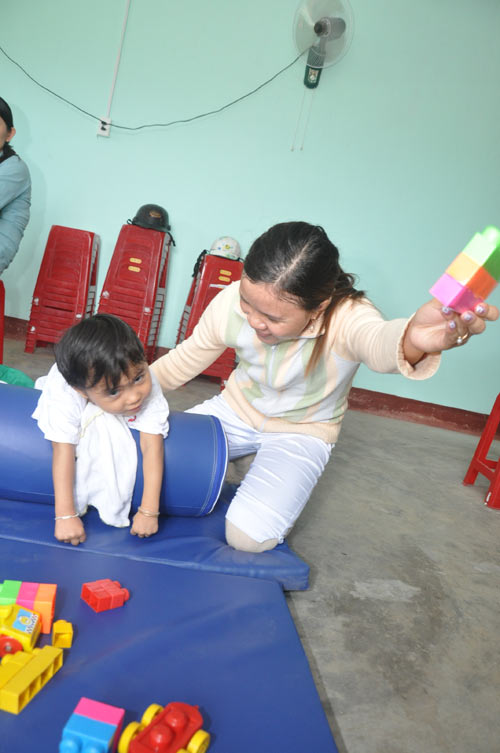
Community-based rehabilitation at Hoa Hiep Nam Ward in Danang